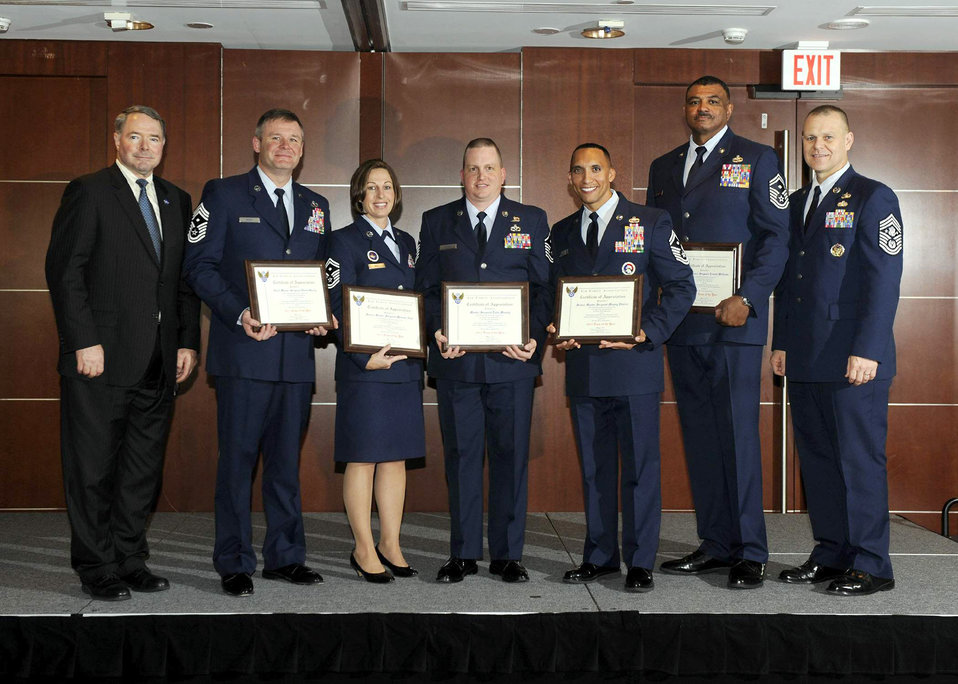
2011 Team of the Year

Air Force First Sergeants were honored as the 2011 Air Force Association Team of the Year during a ceremony in Rosslyn, Va. on May 2, 2011. AFA President Michael M. Dunn and Chief Master Sgt. of the Air Force James Roy pose with special duty representatives (from left) Chief Master Sgt. David R. Henry, Senior Master Sgt. Melanie K. Noel, Master Sgt. Todd K. Meaney, Senior Master Sgt. Manny Pi?eiro and Senior Master Sgt. Ernest T. Williams.